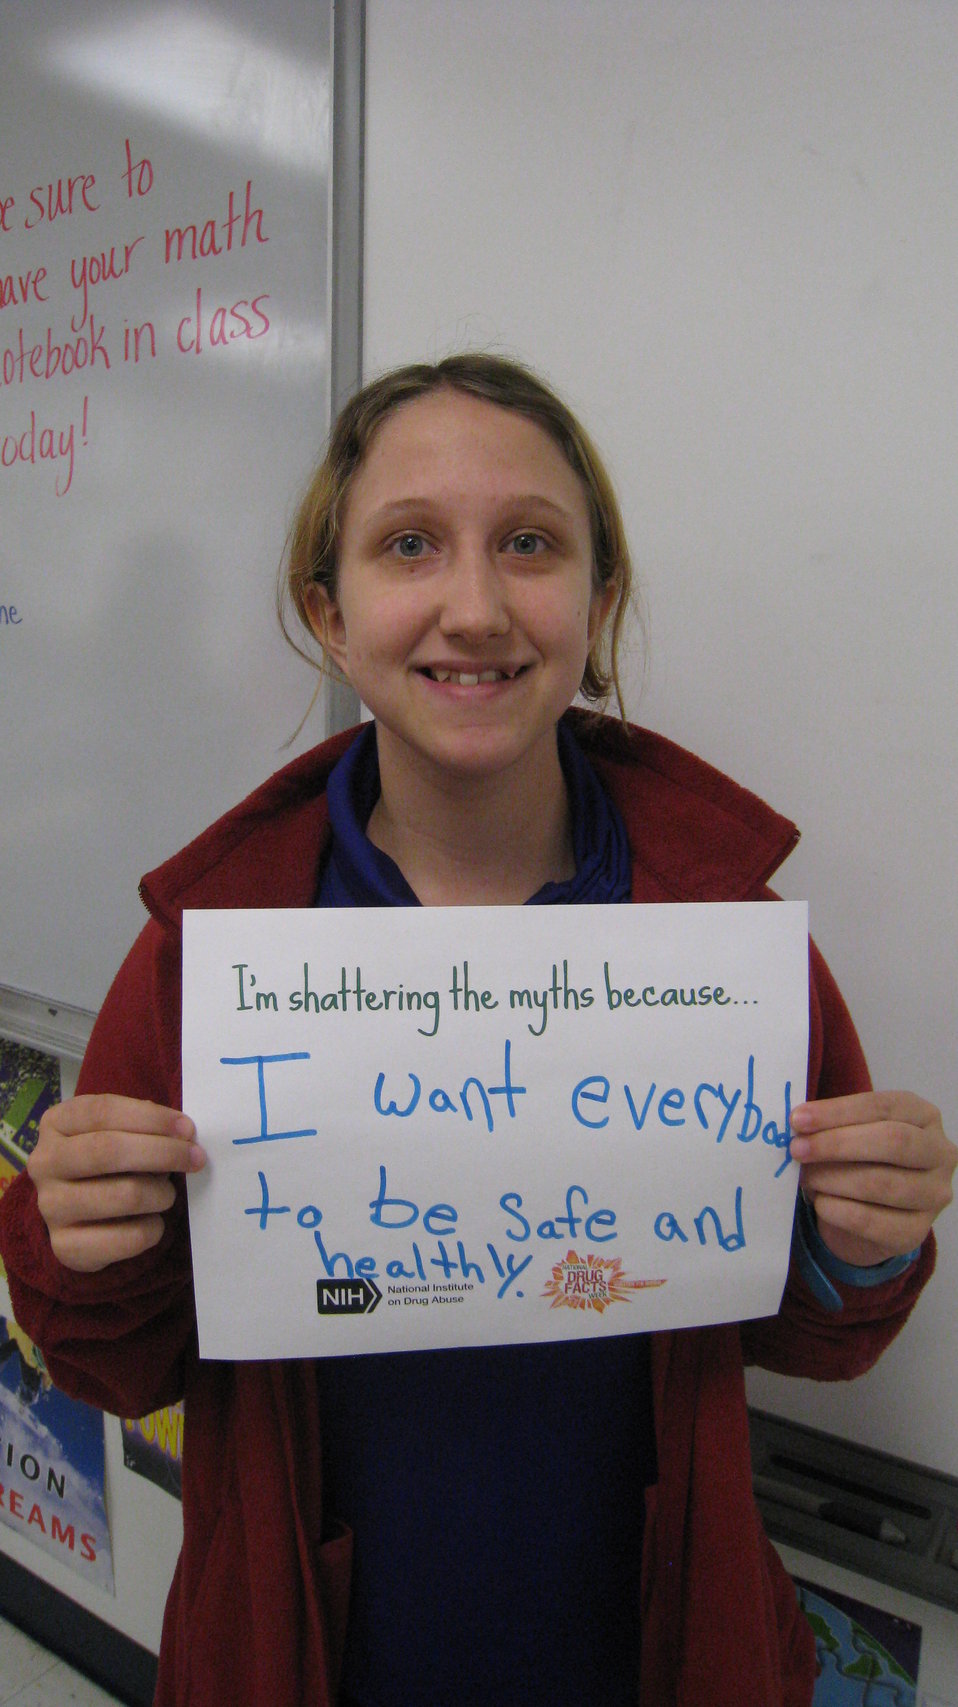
I'm Shattering the Myths Because...

Teenagers from the Van Buren County SAFE Coalition's, Youth Leadership Council (YLC) in Keosauqua, Iowa participate in various events during National Drug Facts Week, 2014.